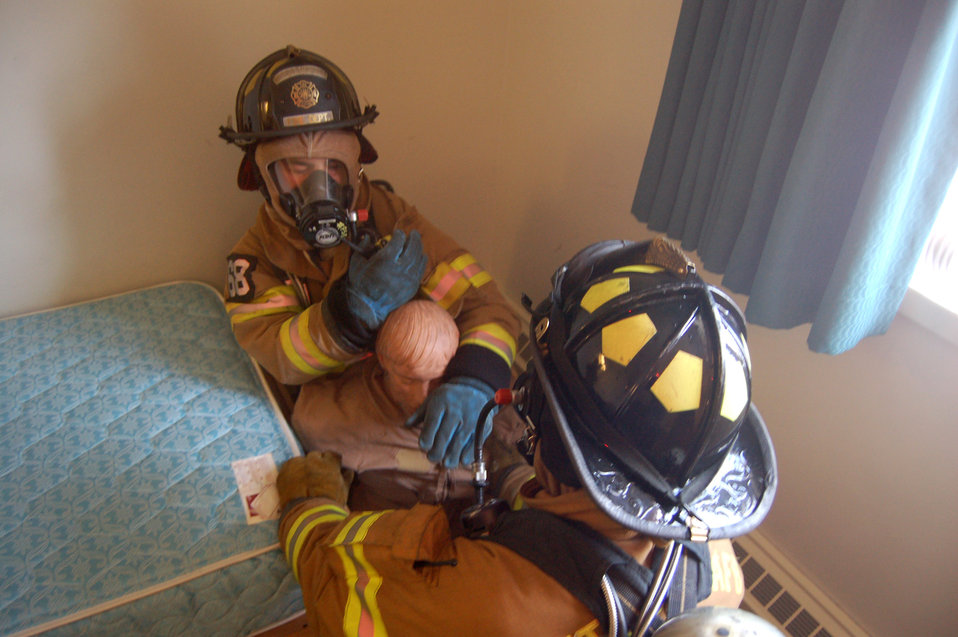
Firefighter lives his childhood dream

Tech. Sgt. Chancey Cruger prepares to lift a simulated victim during a firefighting exercise April 10 at Peterson Air Force Base, Colo. The training is essential to keeping the firefighters sharp and ready to perform their duties at a moment's notice.